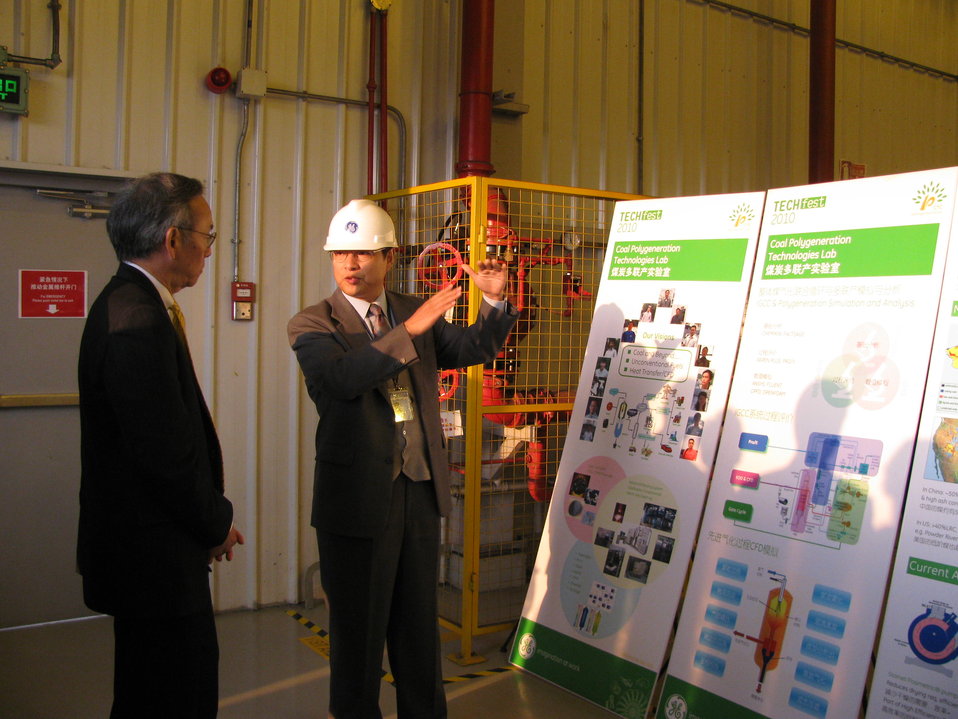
Shanghai 058